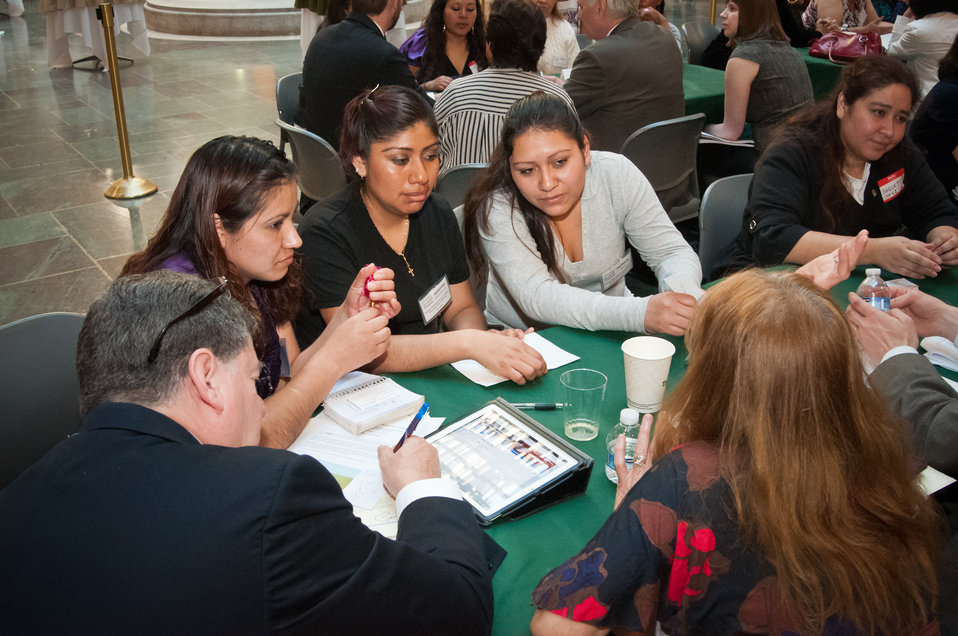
The United States Department of Agriculture (USDA), Office of Advocacy and Outreach hosted a Breakfast Networking Reception with Alianza Nacional de Campesinas an organization for Hispanic Farmworker Women to network and discuss their issues, priorities and opportunities in rural communities throughout the United States in Washington, DC, Tuesday, April 9, 2013. The women were able to speak to representatives from nine Federal agencies with migrant programs: White House, USDA, Department of Health and Human Services (HHS), Housing and Urban Development (HUD), Department of Labor (DOL), Equal Employment Opportunity Commission (EEOC), Department of Education (DOE), Environmental Protection Agency (EPA), and United States Citizenship and Immigration Services (YSCUS).